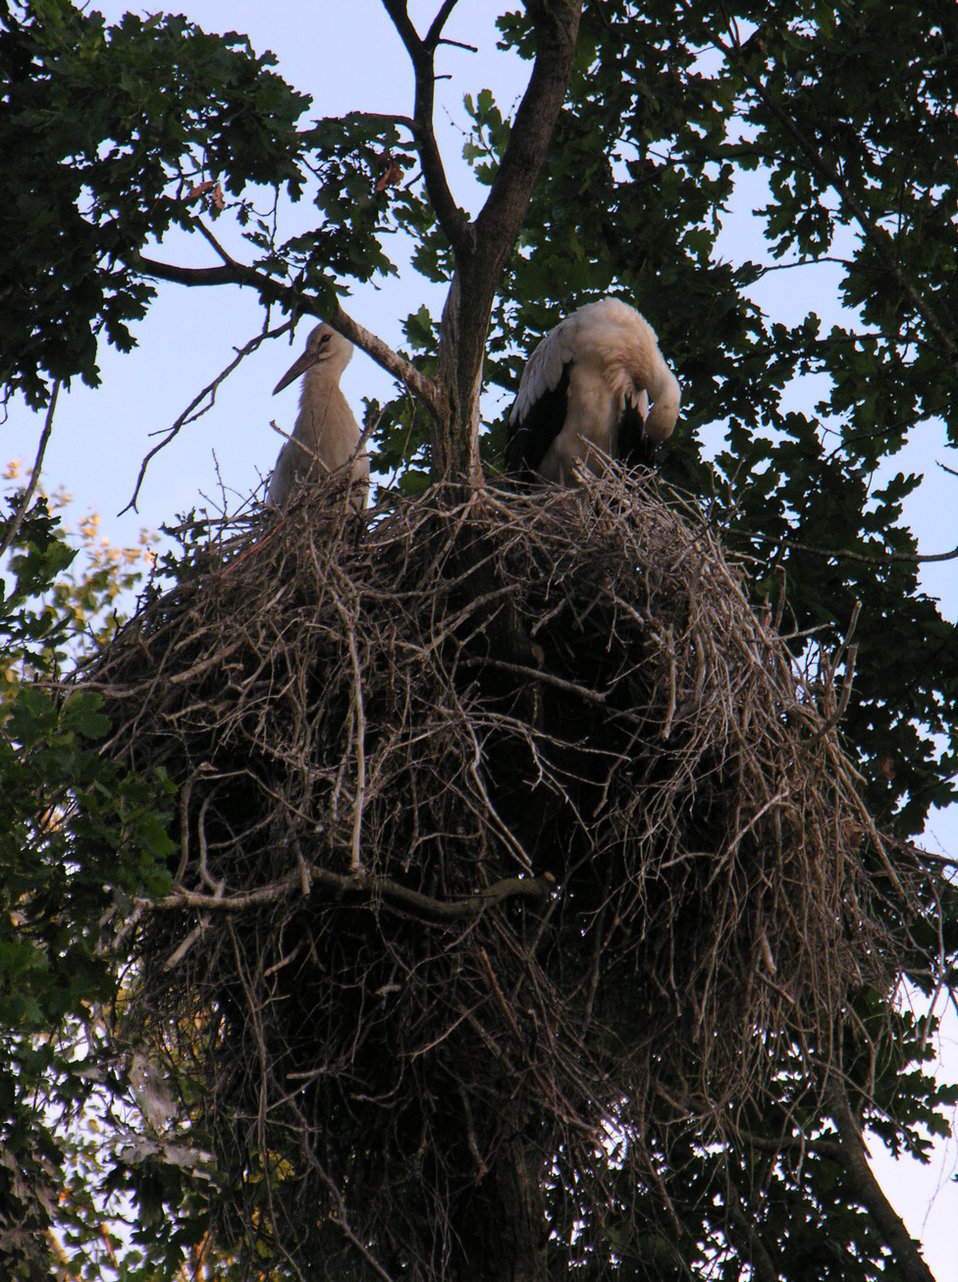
106-Knabikai2 resize